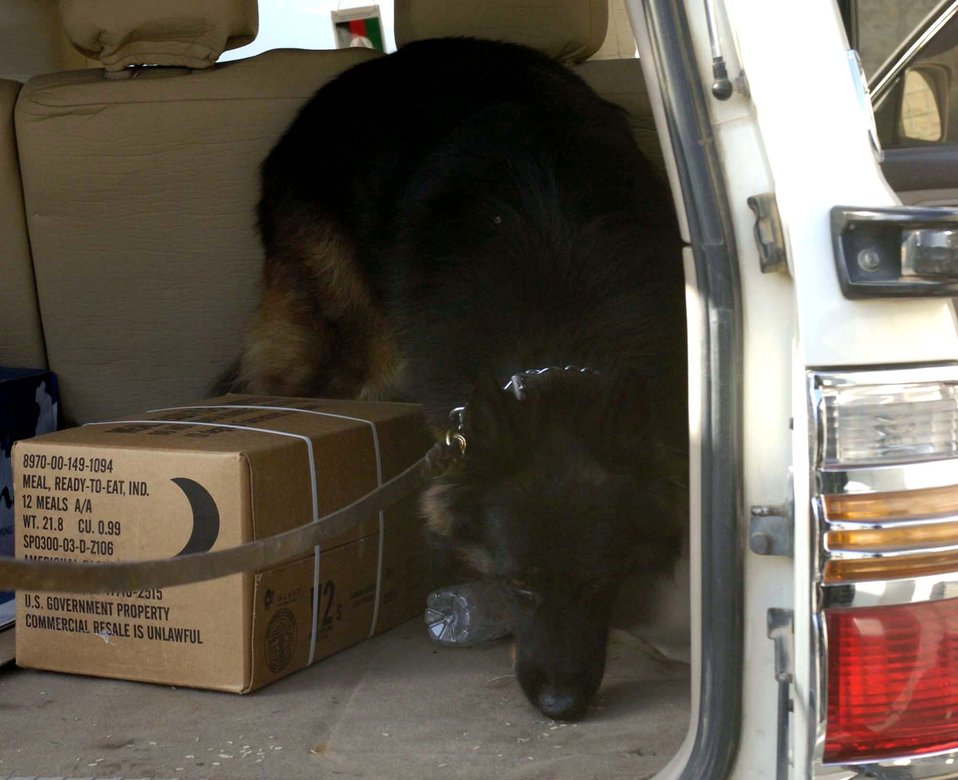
Airman, dog provide security for Afghanistan

KABUL COMPOUND, Afghanistan -- Dax, a military working dog, searches the back of a vehicle here. Dax and his handler, Staff Sgt. David Yepsen, are the only Air Force canine team in Afghanistan. They are deployed supporting Operation Enduring Freedom from the 43rd Security Forces Squadron at Pope Air Force Base, N.C.